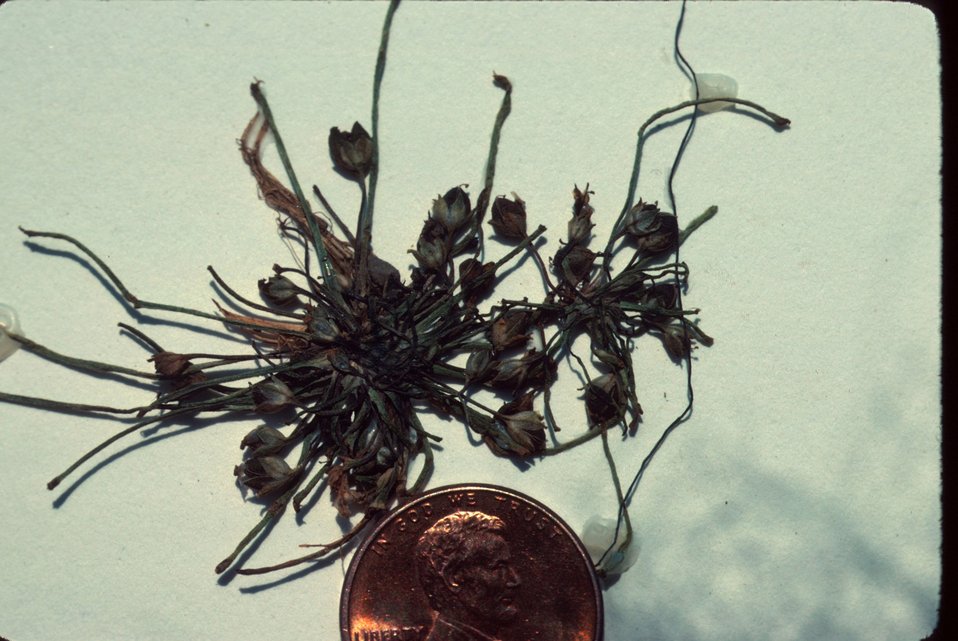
Limnosella acaulis Wildflower, aquatic